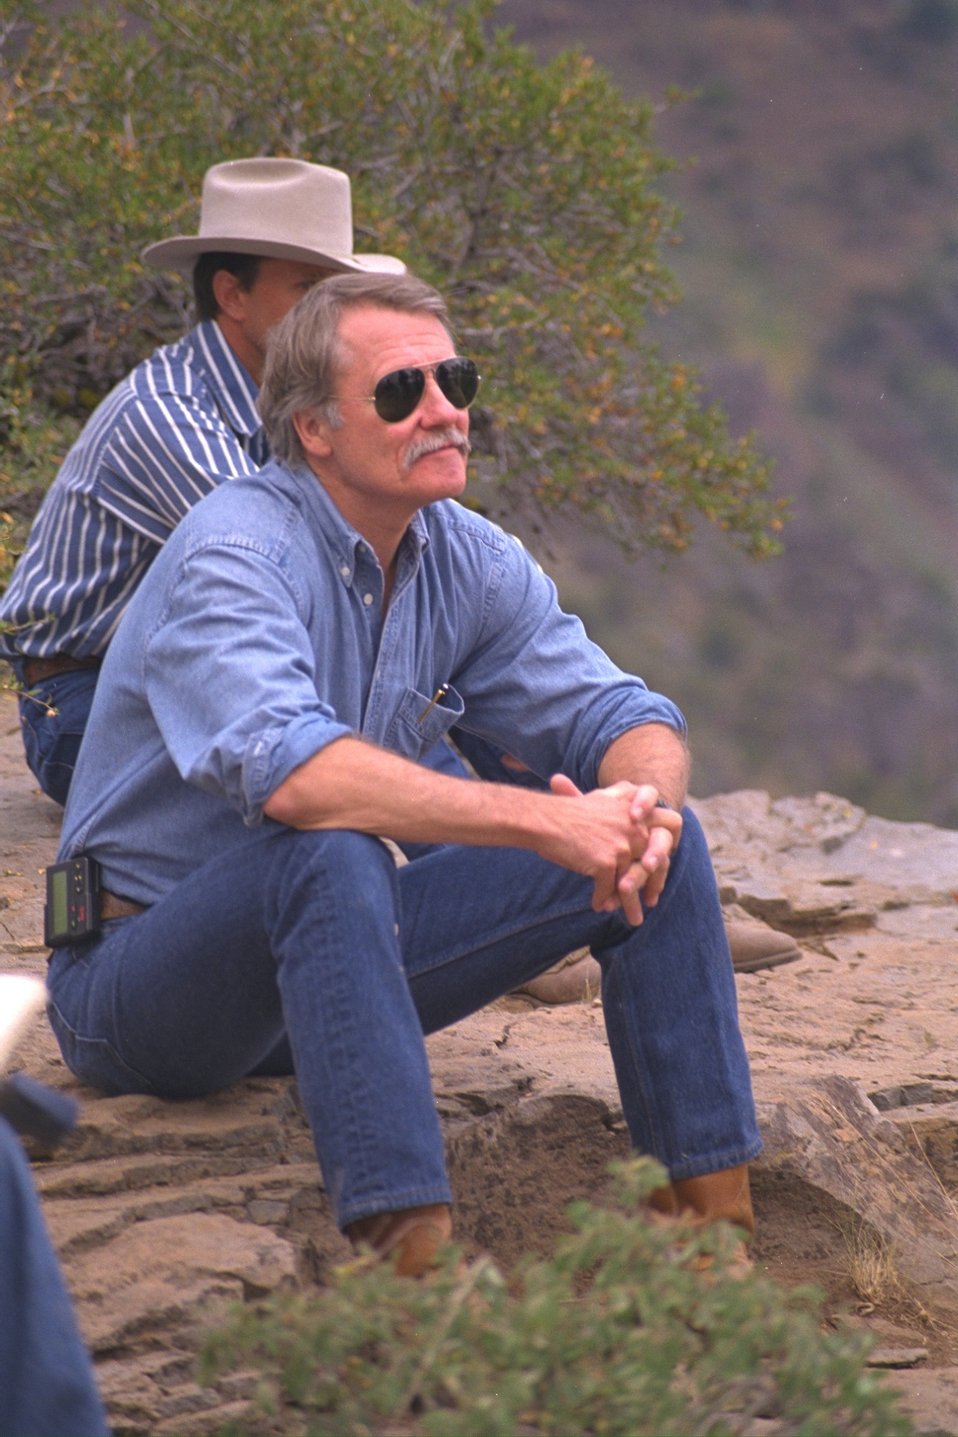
Governor Kitzhaber and Stacy Davies at Big Indian Gorge viewpoint.